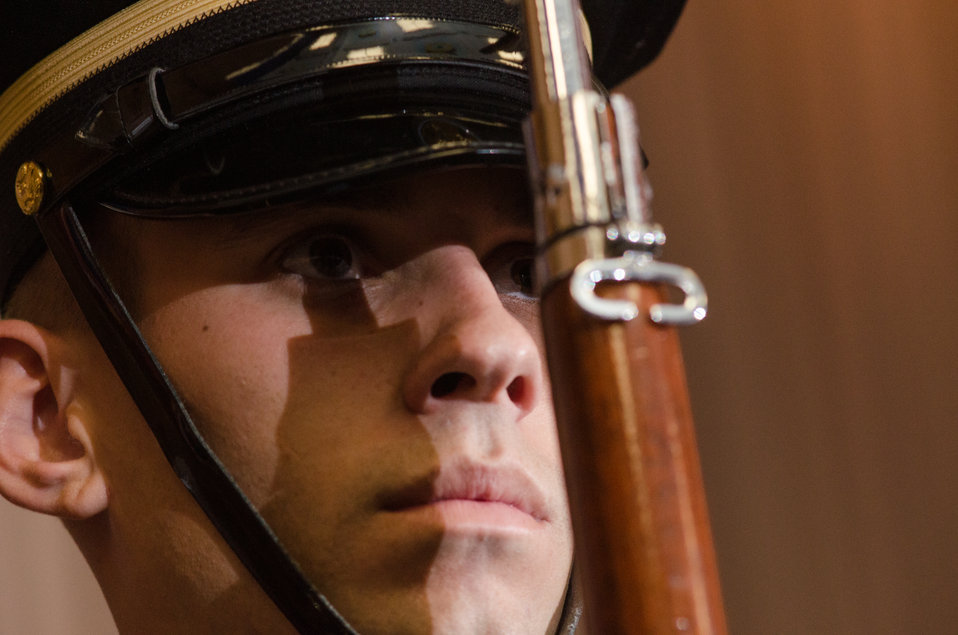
The U.S. Military District of Washington Joint Armed Forces Color Guard present the colors during the U.S. Department of Agriculture (USDA) 2013 National Hispanic Heritage Month ”Hispanics: Serving and Leading our Nation with Pride and Honor,” on Thursday, Sept. 19, 2013, in the Jefferson Auditorium, USDA Headquarters, Washington, D.C.